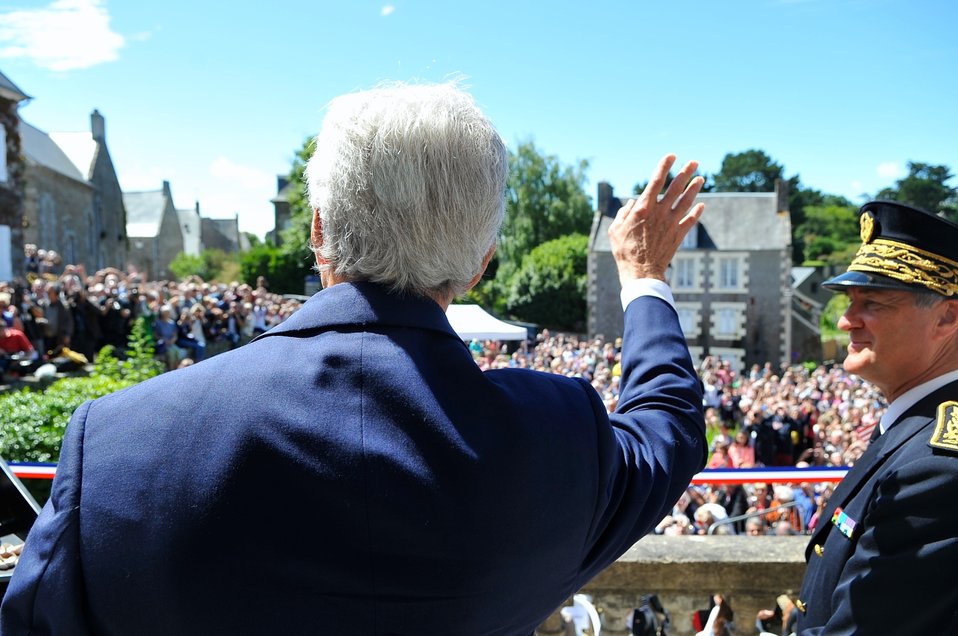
Secretary Kerry Waves to Saint Briac Residents as He Arrives for WWII Commemoration Ceremony

Residents of the Brittany town of Saint Briac, France, greet U.S. Secretary of State John Kerry as he arrives at the Town Hall on June 7, 2014, to deliver a speech saluting the endurance of the U.S.-French alliance and thanking the town for saving his family's possessions after their home was destroyed by the Nazis at the end of World War II.